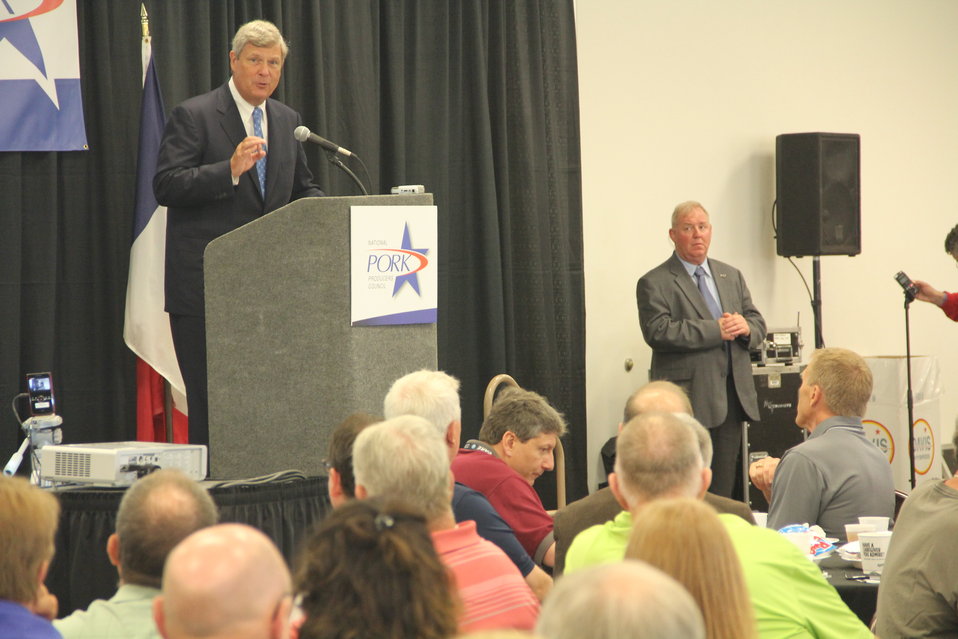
Agriculture Secretary Tom Vilsack delivers remarks at World Pork Expo in Des Moines, IA on Jun. 5, 2014.